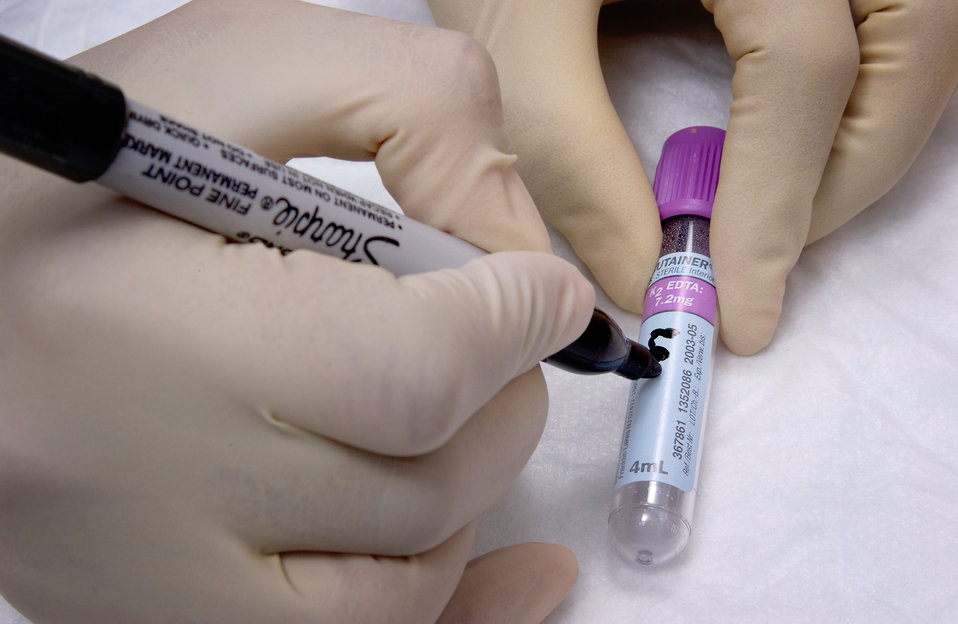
This image depicts a trained phlebotomist, i.e., a technician skilled in the practice of drawing blood from a patient, correctly marking a Vacutainer� tube that will be used to extract a blood sample from the antecubital vein located at the anterior elbow region of a patient's arm. This image is the second in a series of 19 images outlining the steps involved in extracting blood during the venipuncture process.